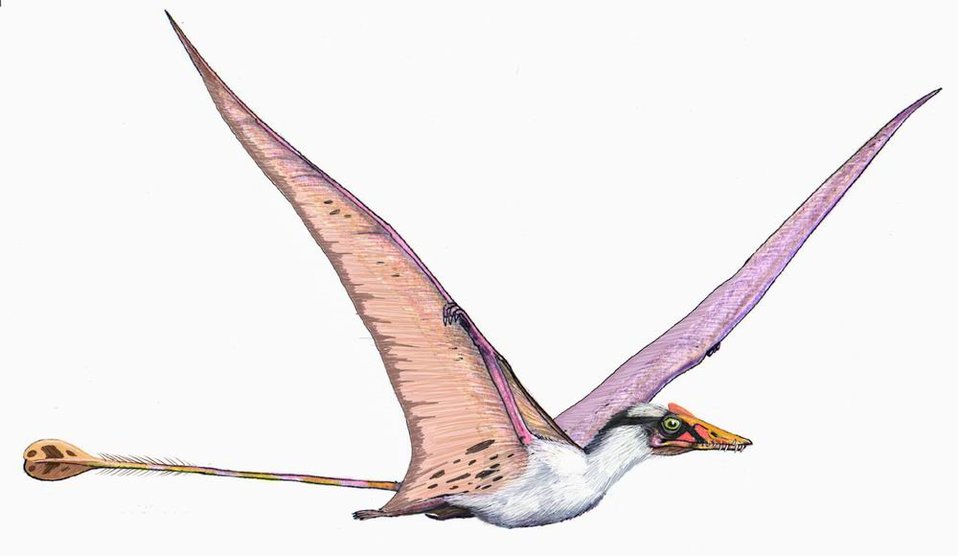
Deutsch: Campylognathoides. Deutsch: Campylognathoides. Campylognathoides. Restoration of Campylognathoides with a hypothetical tail form. Español: Campylognathoides. Magyar: Egy repülő őshüllő: Campylogn sp. Italiano: Campylognathoides. Nederlands: Campylognathoides. Polski: Campylognathoides. Русский: Campylogn. 中文: 曲頜形翼龍. Русский: Кампилогнатоид